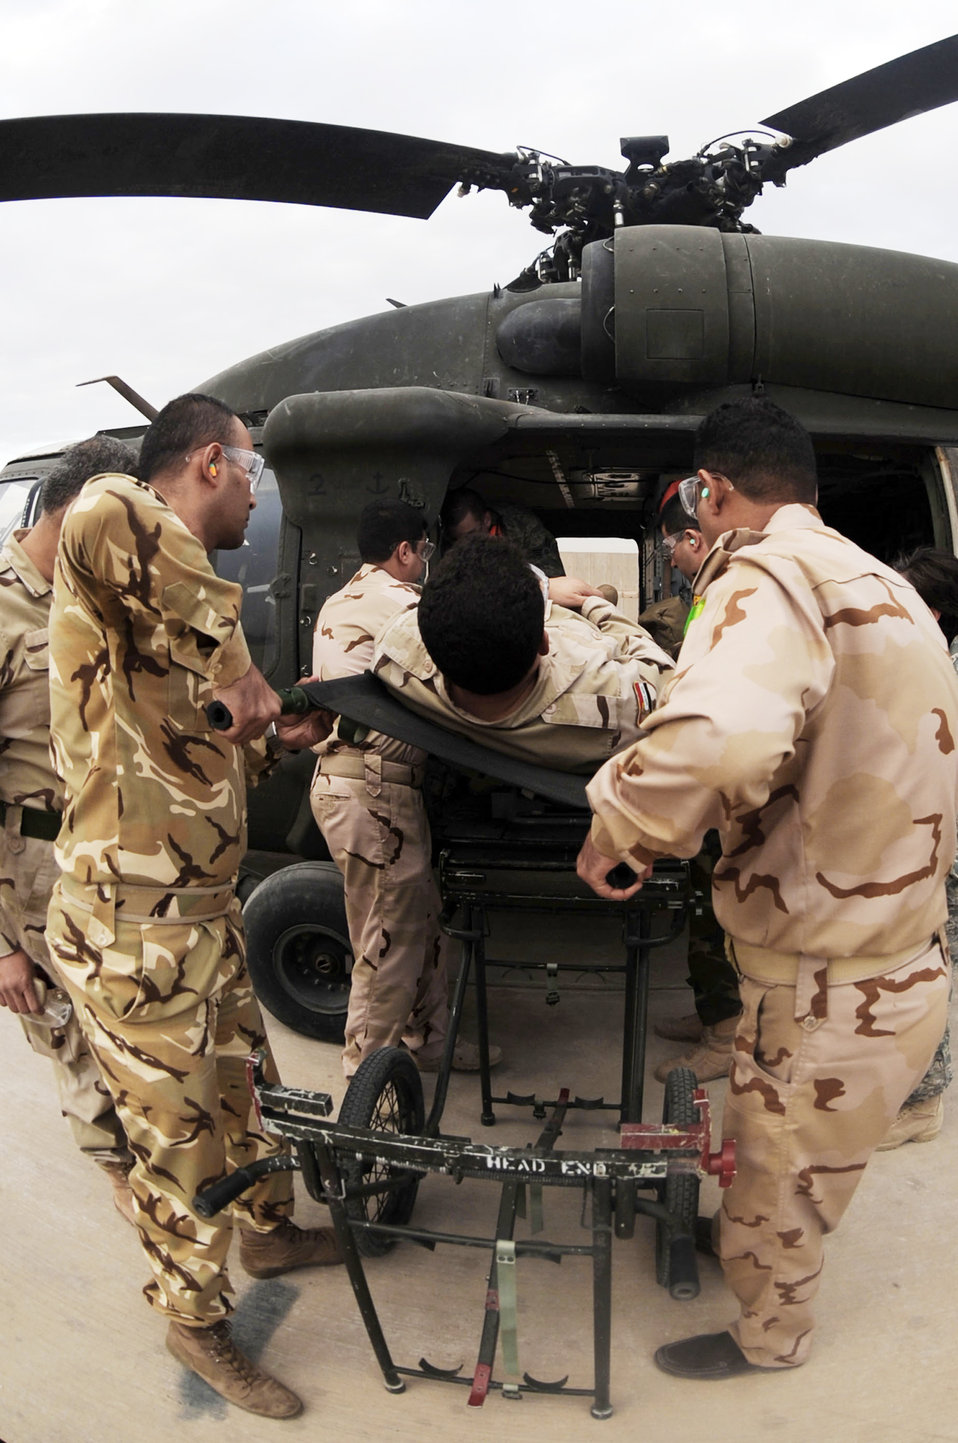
Air Force medics partner with Iraqi Ministry of Defense hospital

Iraqi air force airmen put their skills to the test during medical evacuation training Dec. 21, 2009, at the Air Force Theater Hospital at Joint Base Balad, Iraq. The main focus of the training was to teach Ministry of Defense nurses and medics to properly load and unload ambulatory patients from an aircraft.